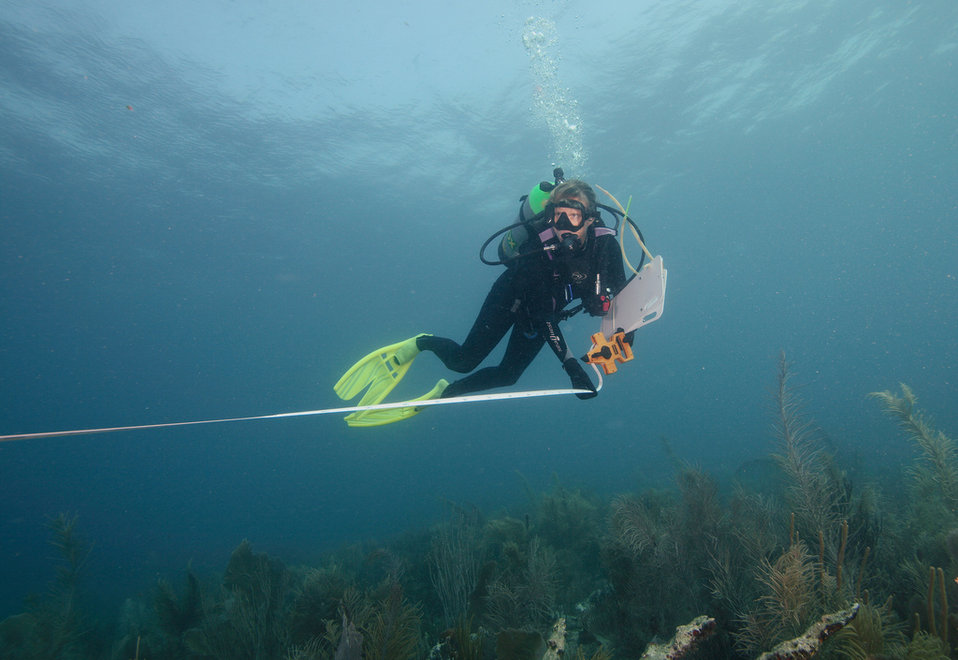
Measuring Reef Structure in Puerto Rico

Peggy Harris of EPA's Office of Research and Development dive team helps to survey coral reef conditions off the southern coast of Puerto Rico.

EPA studies coral reefs because they are great indicators of water quality and the overall health of coastal watersheds.

Learn more @ www.epa.gov/bioindicators/coral/index.html

EPA Region 2 more locally serves New Jersey, New York, Puerto Rico, the U.S. Virgin Islands and eight tribal nations.